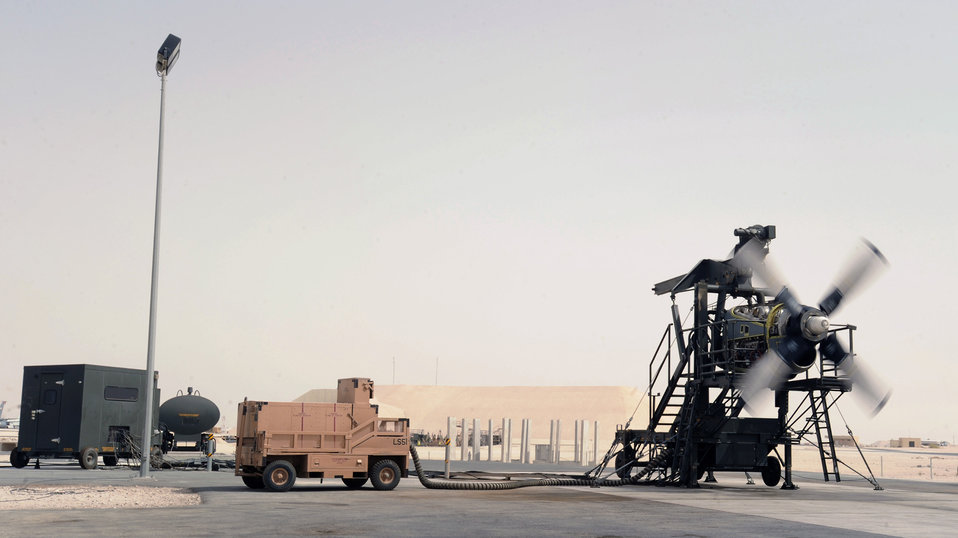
New test cell

Maintainers in the 379th Expeditionary Maintenance Squadron propulsion flight at an air base in Southwest Asia run a serviceability test on a C-130H Hercules engine June 14 using the new T56 engine test cell. This is the only T56 test cell in the U.S. Central Command area of responsibility and enables maintainers to test engines in the AOR instead of sending them back to Ramstein Air Base, Germany.